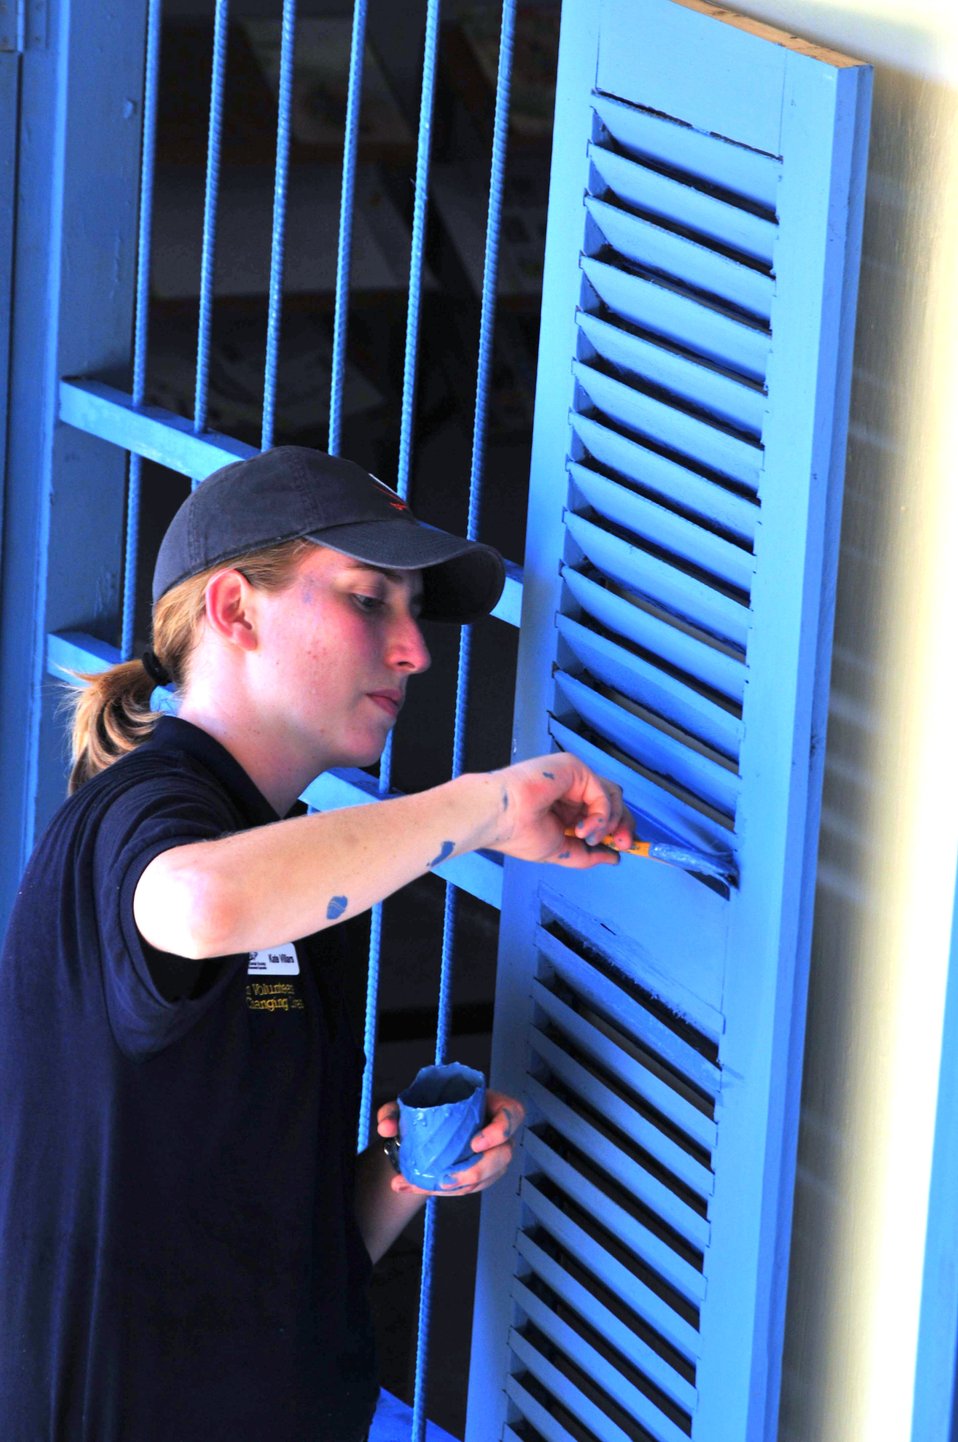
UVA Student Volunteer Kate Villars Paints Window Shutters

Kate Villars, a University of Virginia student volunteering with University of California, San Diego Pre-Dental Society, paints window shutters at the Andaung Thma School during an engineering civic action program in support of Pacific Partnership 2010 on June 24, 2010, in Sihanoukville, Cambodia. The Military Sealift Command hospital ship USNS Mercy (T-AH 19) is in Cambodia conducting the fifth in a series of annual U.S. Pacific Fleet humanitarian and civic assistance endeavors to strengthen regional partnerships.